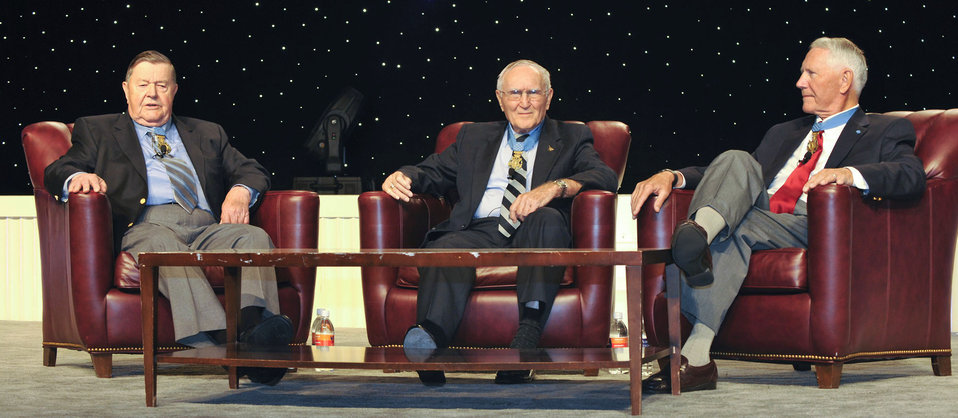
Medal of Honor recipients

(Left to right) Retired Col. Joe Jackson, retired Col. George Day and retired Col. Leo Thorsness participated in a question and answer session Sept. 15, 2010, at the Air Force Association annual Air and Space Conference and Technology Exposition at National Harbor, in Oxon Hill, Md. All three men received the Medal of Honor for exceptional bravery while in combat actions during the Vietnam War.